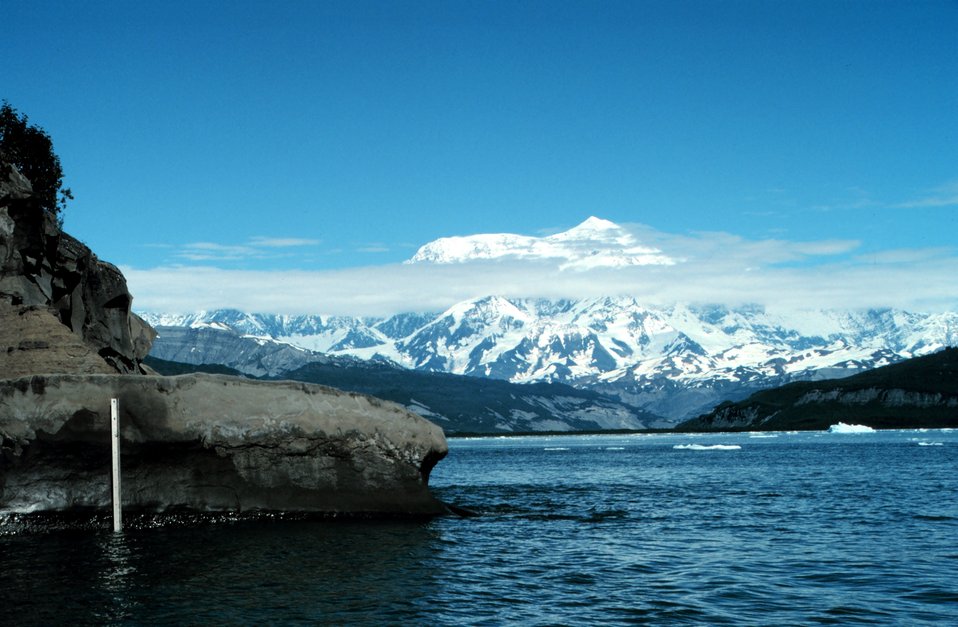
Photo #13 of Mount St. Elias sequence. Mount Saint Elias is one of the largest mountains visible from the sea on the North American continent. It rises to a height of 18,008 feet in a distance of less than 20 miles from sea level at Icy Bay.